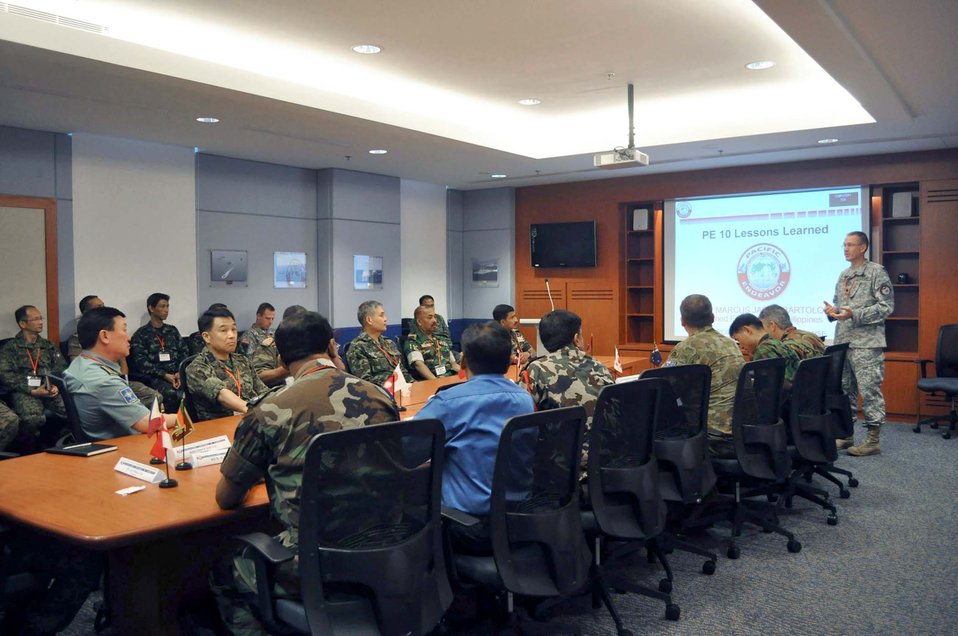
Pacific Endeavor

Army Lt. Col. Justin Pickett gives a lessons-learned presentation to senior military communicators from 16 Asia-Pacific nations during Pacific Endeavor workshop at Endeavor at Changi Naval Base, Singapore Aug. 27, 2010. Hosted by the Singapore Armed Forces and U.S. Pacific Command, Pacific Endeavor is a humanitarian communication workshop that brings together militaries, non-governmental organizations and private industry to fully test communication procedures during natural disasters.